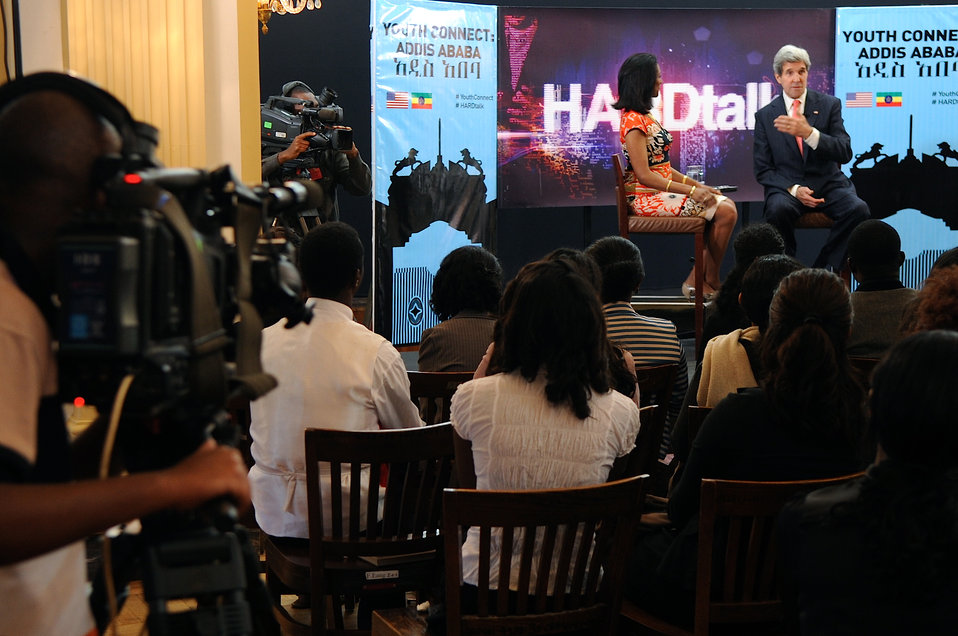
Secretary Kerry Listens to a Question During a Youth Connect Event in Addis Ababa

U.S. Secretary of State John Kerry listens to an audience member ask a question during a special joint BBC 'HARDTalk' and State Department Youth Connect program focused on youth issues at the University of Addis Ababa, Ethiopia, on May 26, 2013.